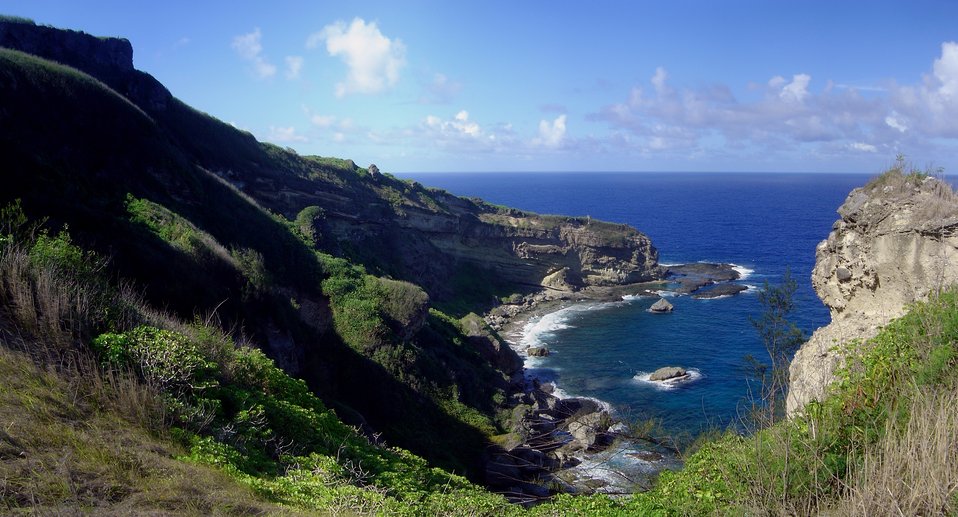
Coast near Forbidden Island, Saipan.